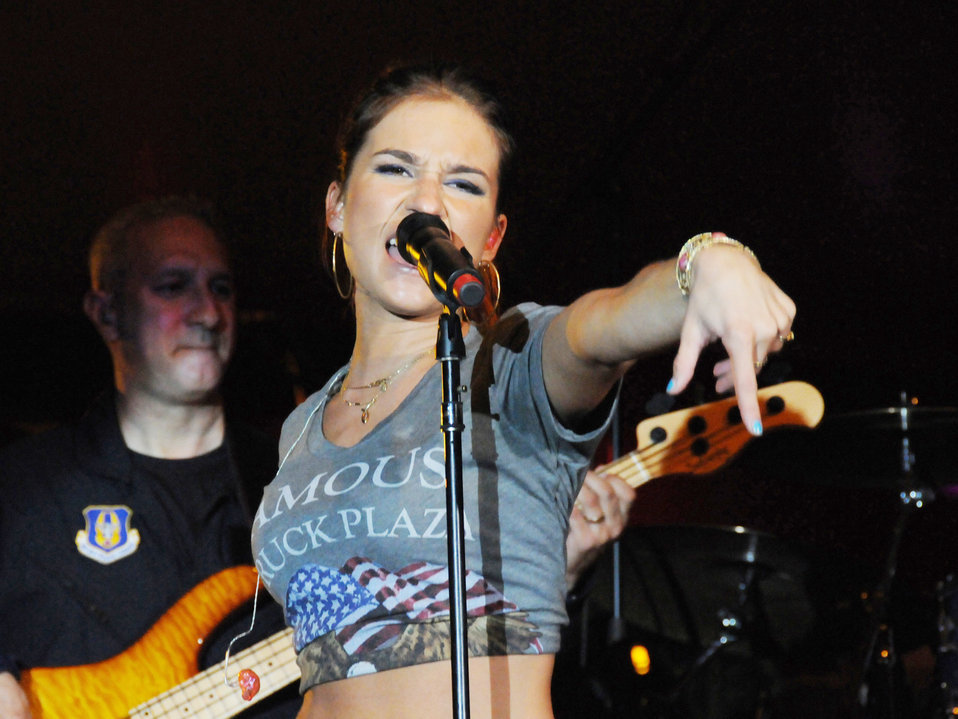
Entertainers put on a show for troops in Southwest Asia

Jessie James performs for a live audience of deployed servicemembers Dec. 6, 2009 at an airbase in Southwest Asia. Tour for Troops 2009 will visit various deployed locations throughout Southwest Asia and Europe and is sponsored by the Air Force Reserve Command.